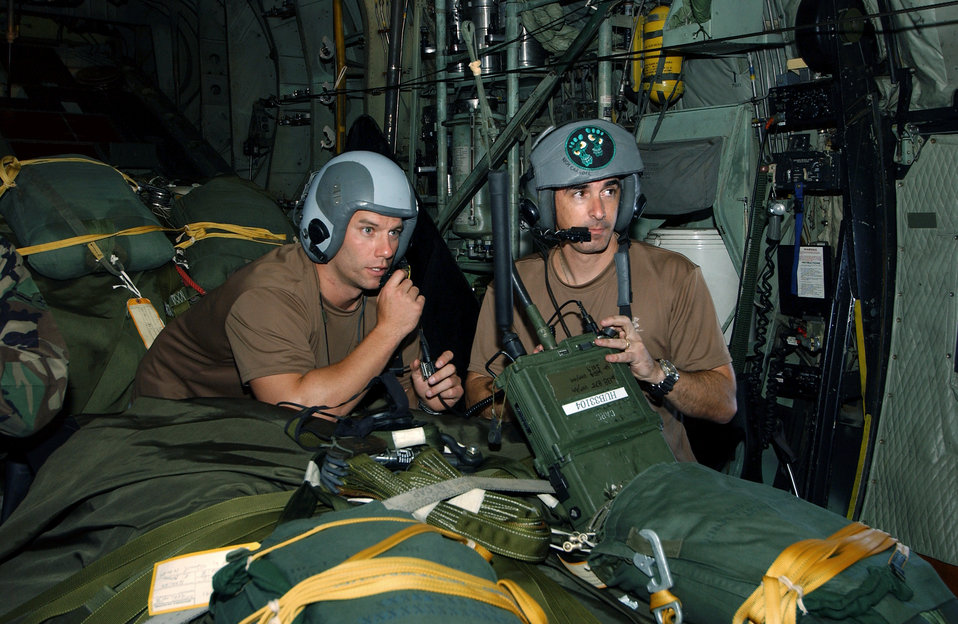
Going over the plan

OVER THE ATLANTIC OCEAN (AFPN) - Pararescuemen from the 38th Rescue Squadron at Moody Air Force Base, Ga., go over their mission plans as they are flown 350 miles northeast of the Caribbean island of St. Maarten to provide medical support to a Chinese fisherman July 23. The fisherman sustained a life-threatening chest injury the day before. After parachuting out of a U.S. Air Force HC-130 aircraft, the pararescuemen reached the fishing vessel and helped the man.